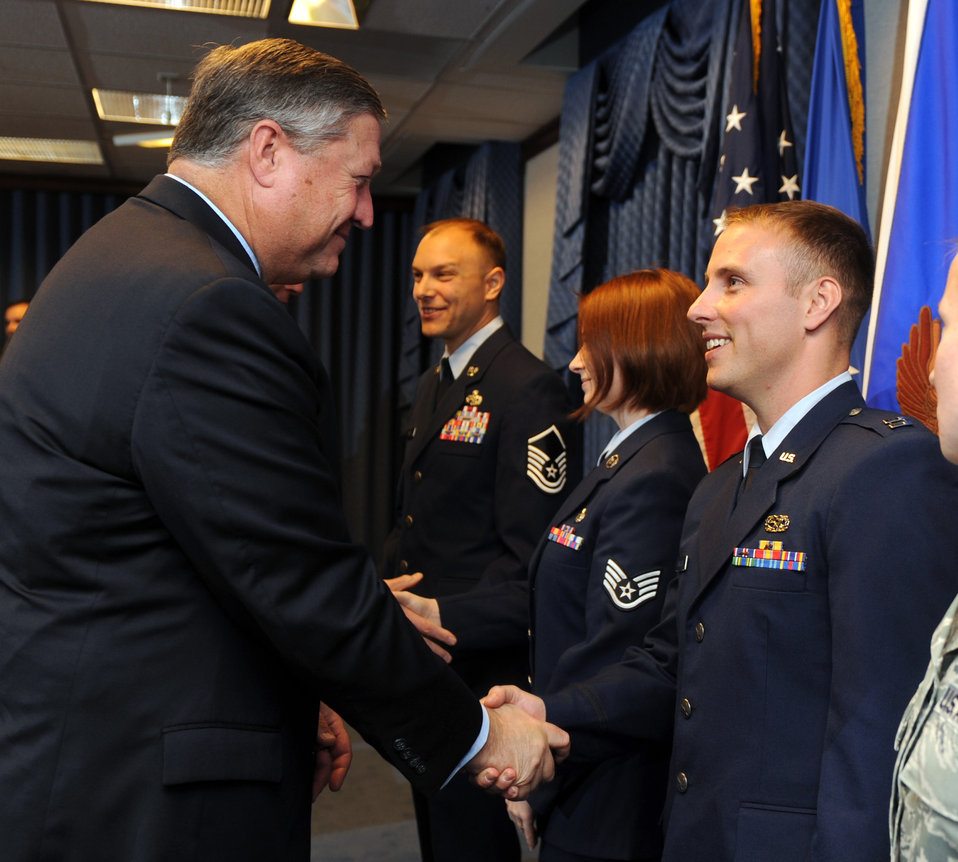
2011 Lew Allen Trophy

Secretary of the Air Force Michael Donley congratulates Capt. William Bernecker, a recipient of the Gen. Lew Allen Jr. Award Trophy, during a ceremony Oct. 28, 2011, in the Pentagon. The trophy is awarded annually to a base-level officers and senior NCO in aircraft, munitions or missile maintenance directly involved in sortie generation.